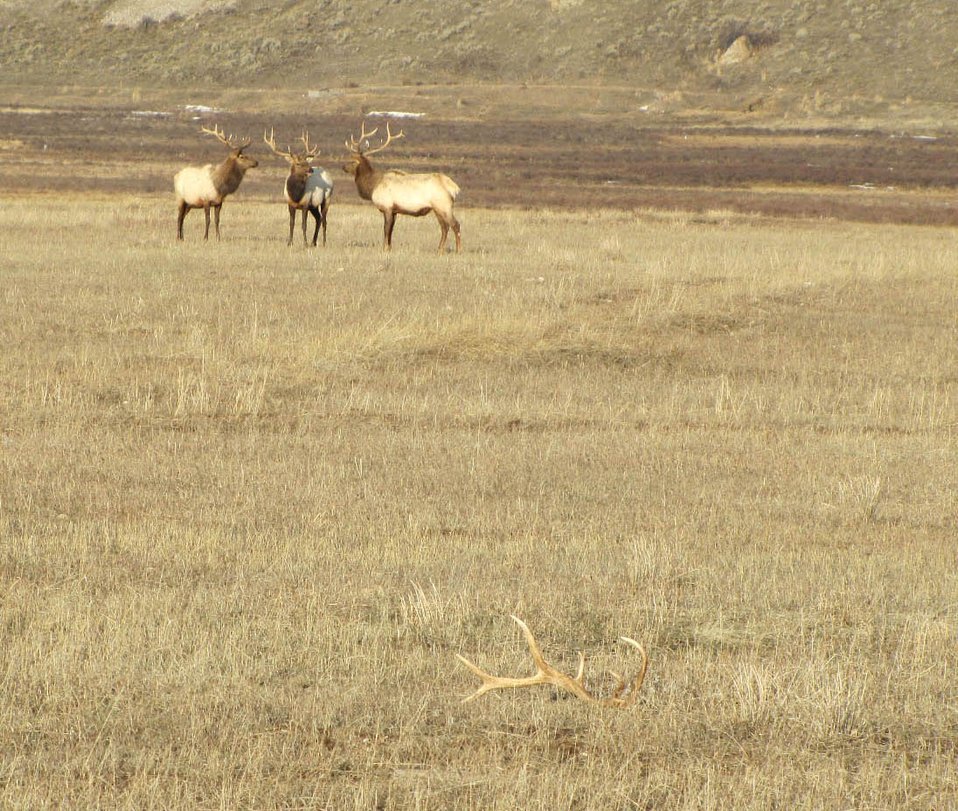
Elk Antler Mystery

Three bulls stand together with a shed antler in the foreground. One can only imagine they're discussing who it belongs to and whose will be the next to fall . . .